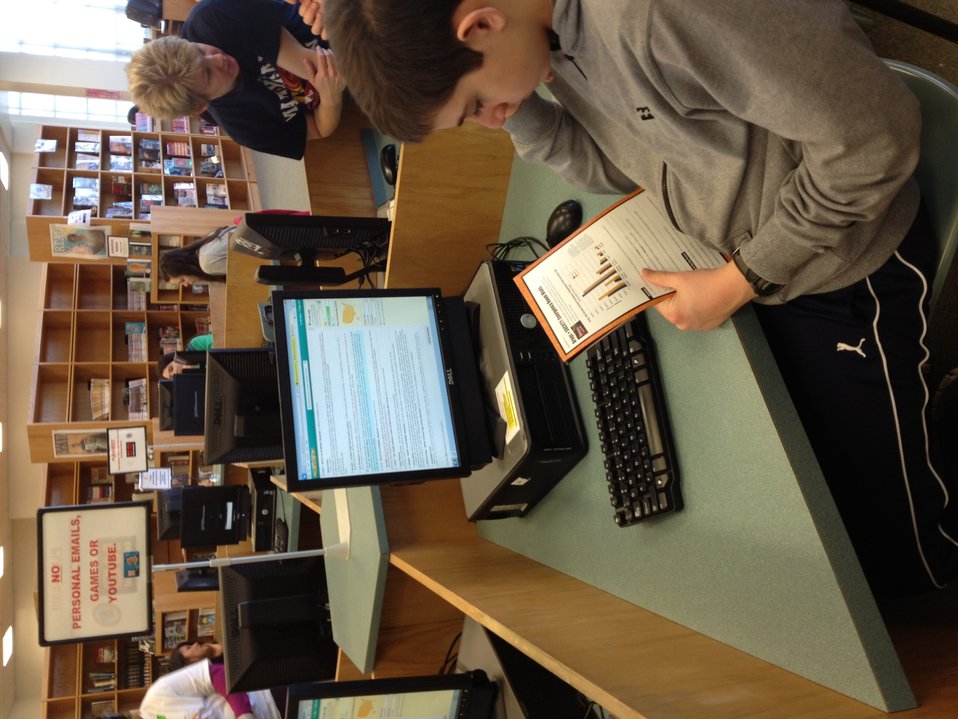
Chat Day NDFW 2013

Rockville, MD. Students from Walter Johnson H.S. participate in NIDA's National Drug Facts Week Chat Day Event, 2013.